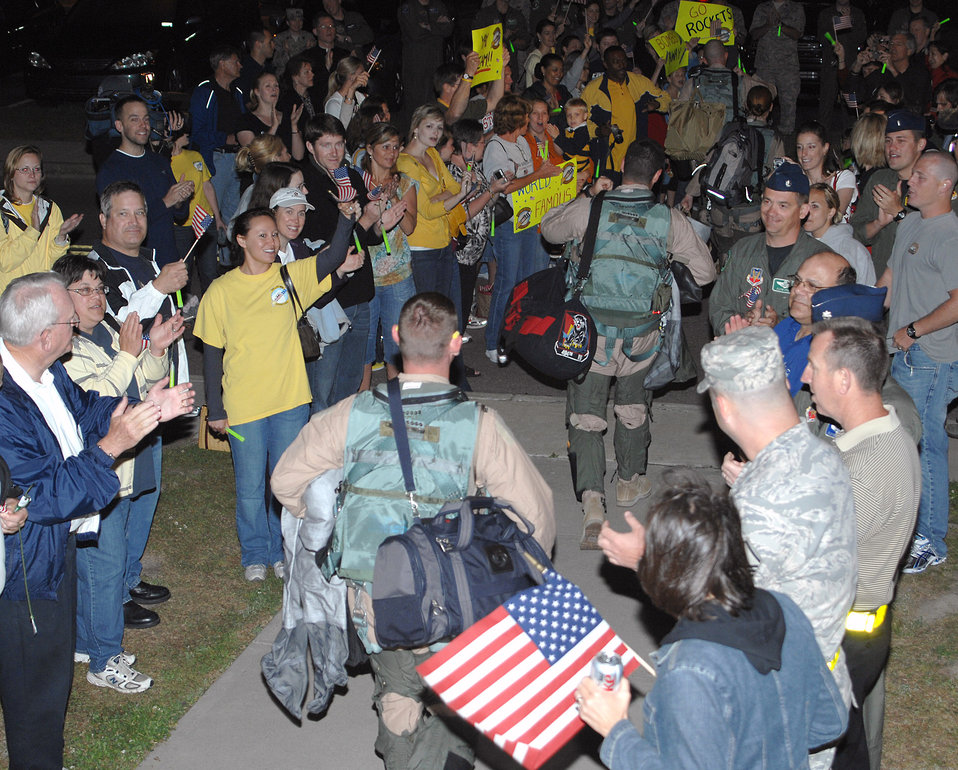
Airmen mobilize to confront Afghan insurgency

Airmen from the 336th Fighter Squadron are greeted by a throng of supporters April 29 at Seymour Johnson Air Force Base, N.C. Friends, families and members of the military affairs committee cheered on the Airmen as they made their way to the flightline for departure.